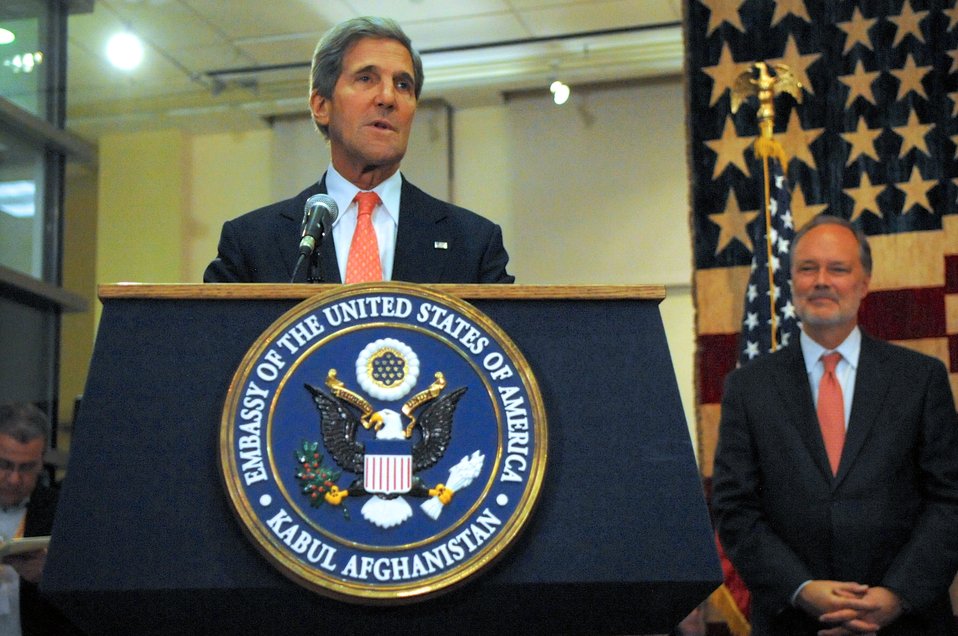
Secretary Kerry Addresses Embassy Kabul Staff

U.S. Secretary of State John Kerry addresses employees at Embassy Kabul, during a visit to Afghanistan for meetings with President Hamid Karzai on October 12, 2013.